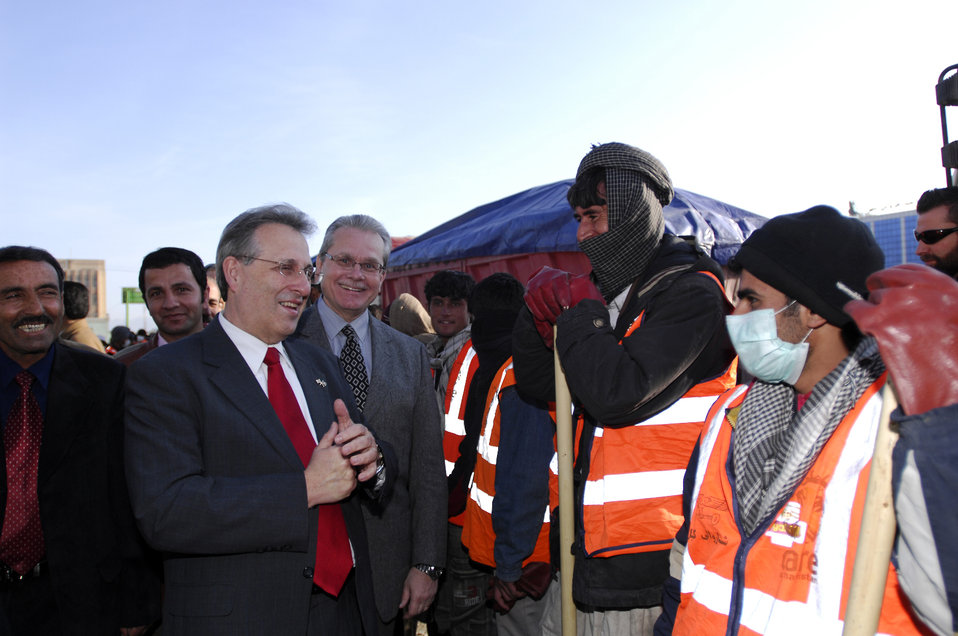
Care37